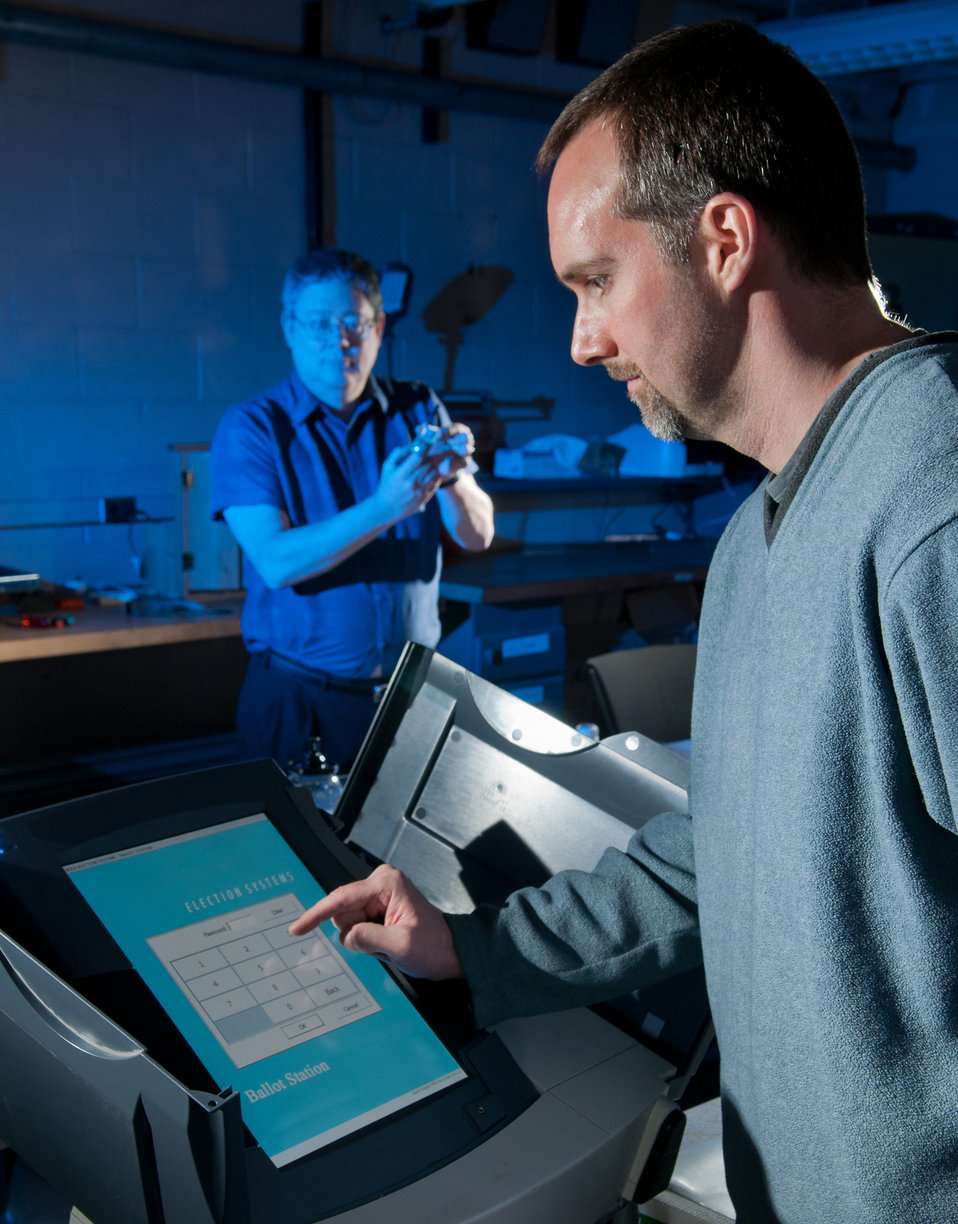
THE VULNERABILITY ASSESSMENT TEAM AT ARGONNE NATIONAL LABORATORY, TEST AN ELECTRONIC VOTING MACHINE FOR SECURITY.